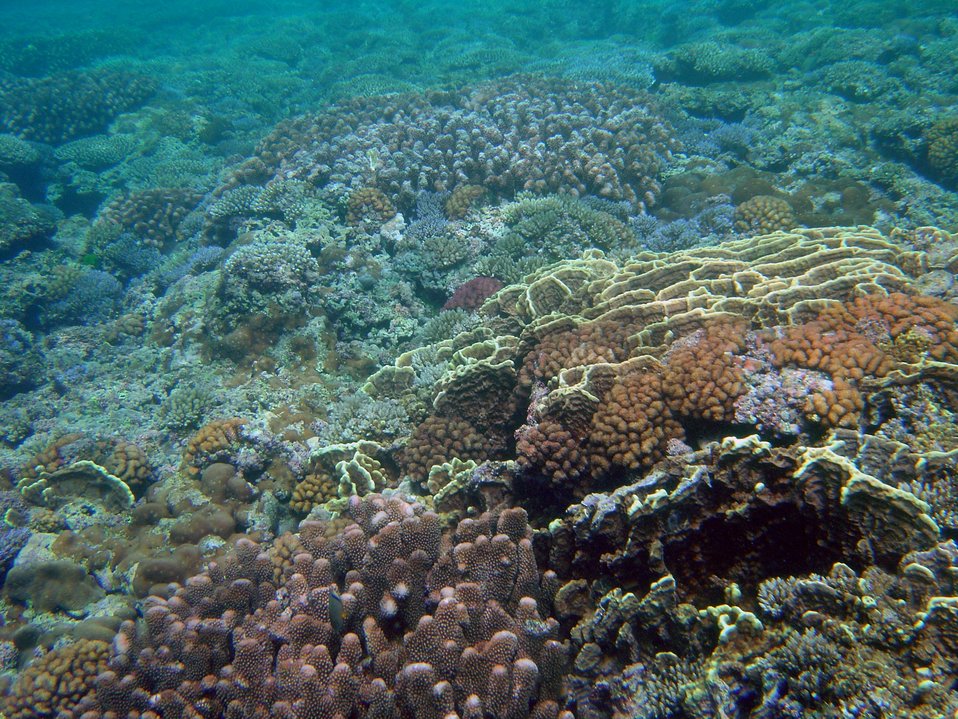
Reef scene